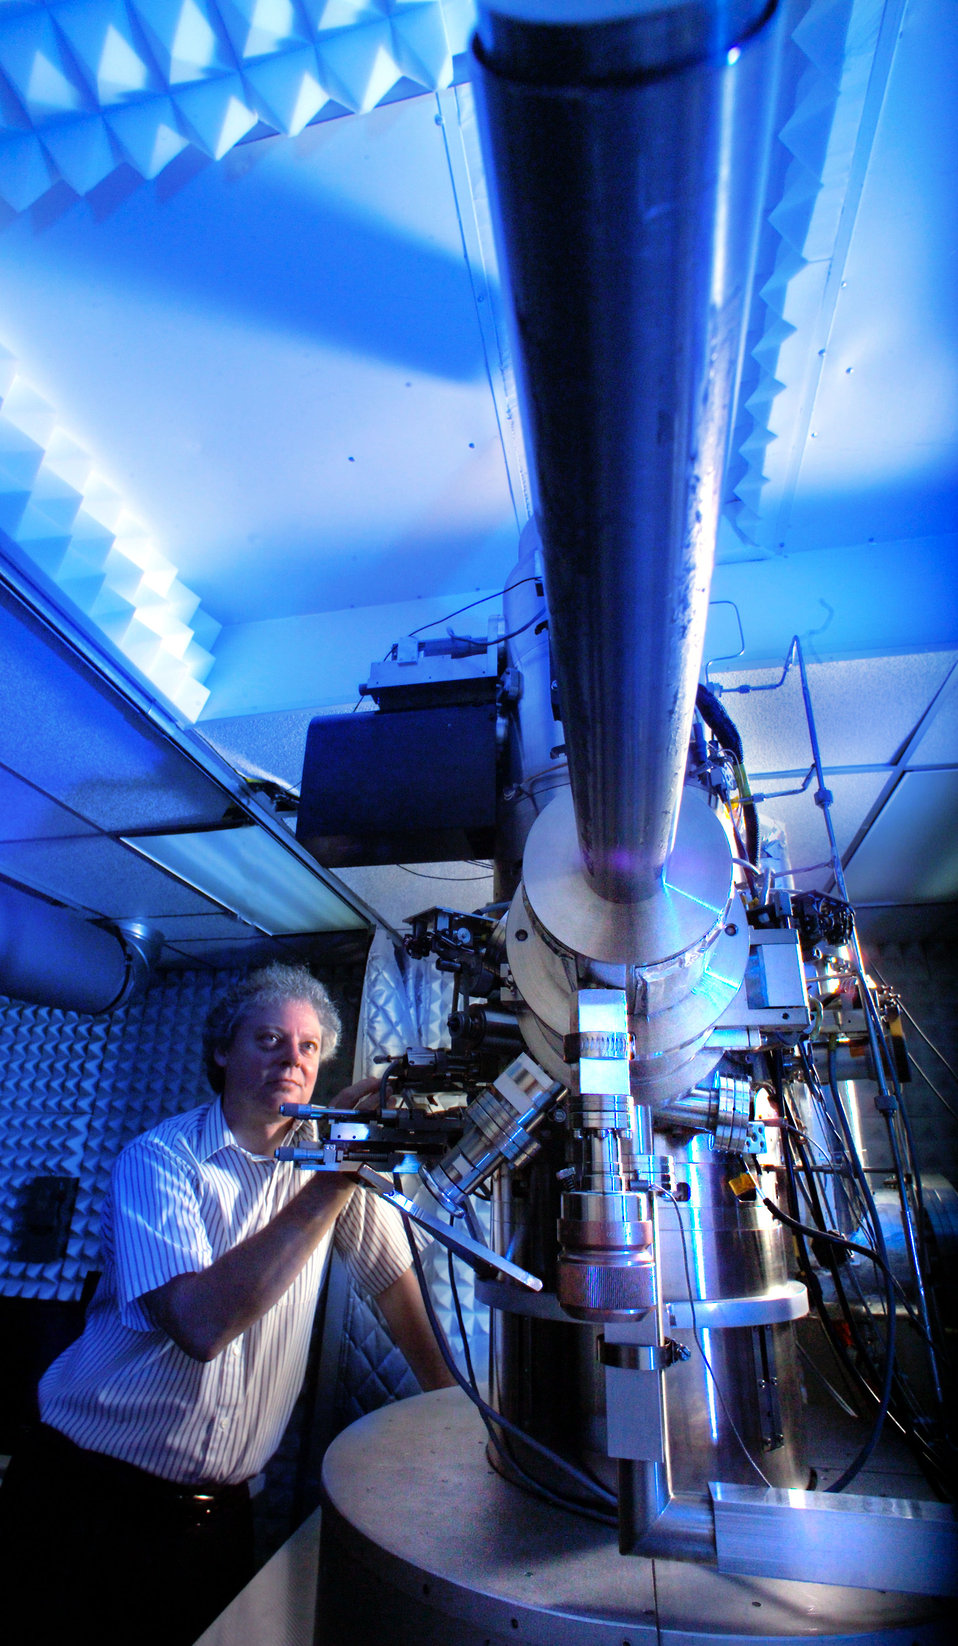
Electron microscope at Oak Ridge National Lab.

04-234-34 DOE photo by Lynn Freeny
Oak Ridge Tennessee 9-14-2004